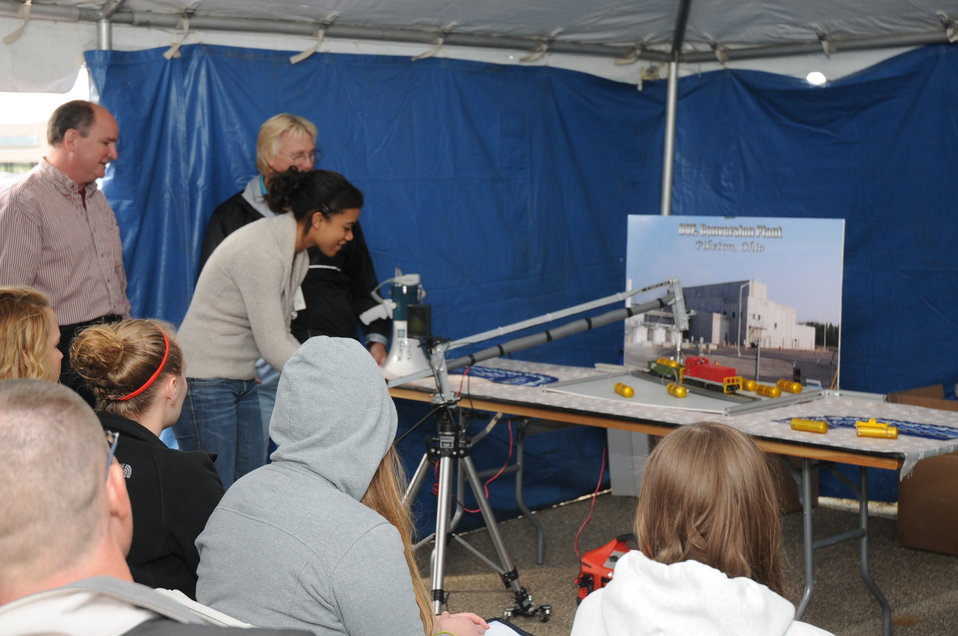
Science Alliance

Sheldon Hurst and Dan Minter of B&W Conversion Services introduce a student participant to the complexities of loading a DUF6 cylinder onto a miniature rail car in a remote camera and crane simulation during Science Alliance activities.